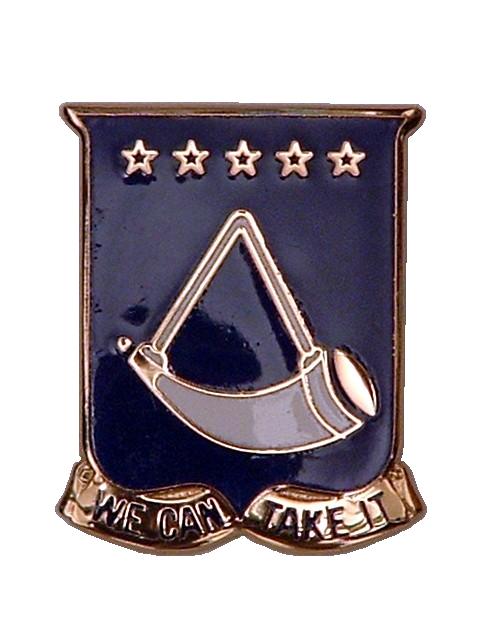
Distinctive Unit Insignia for the 150th Cavalry Regiment
Contents 1 NOTE 2 Licensing 3 Original upload log 3.1 File usage on other wikis NOTE This is a photograph of the unit crest of the 150th Cav that I took myself. Once a better graphic from The Institute of Heraldry is available, it is acceptable to delete this picture.